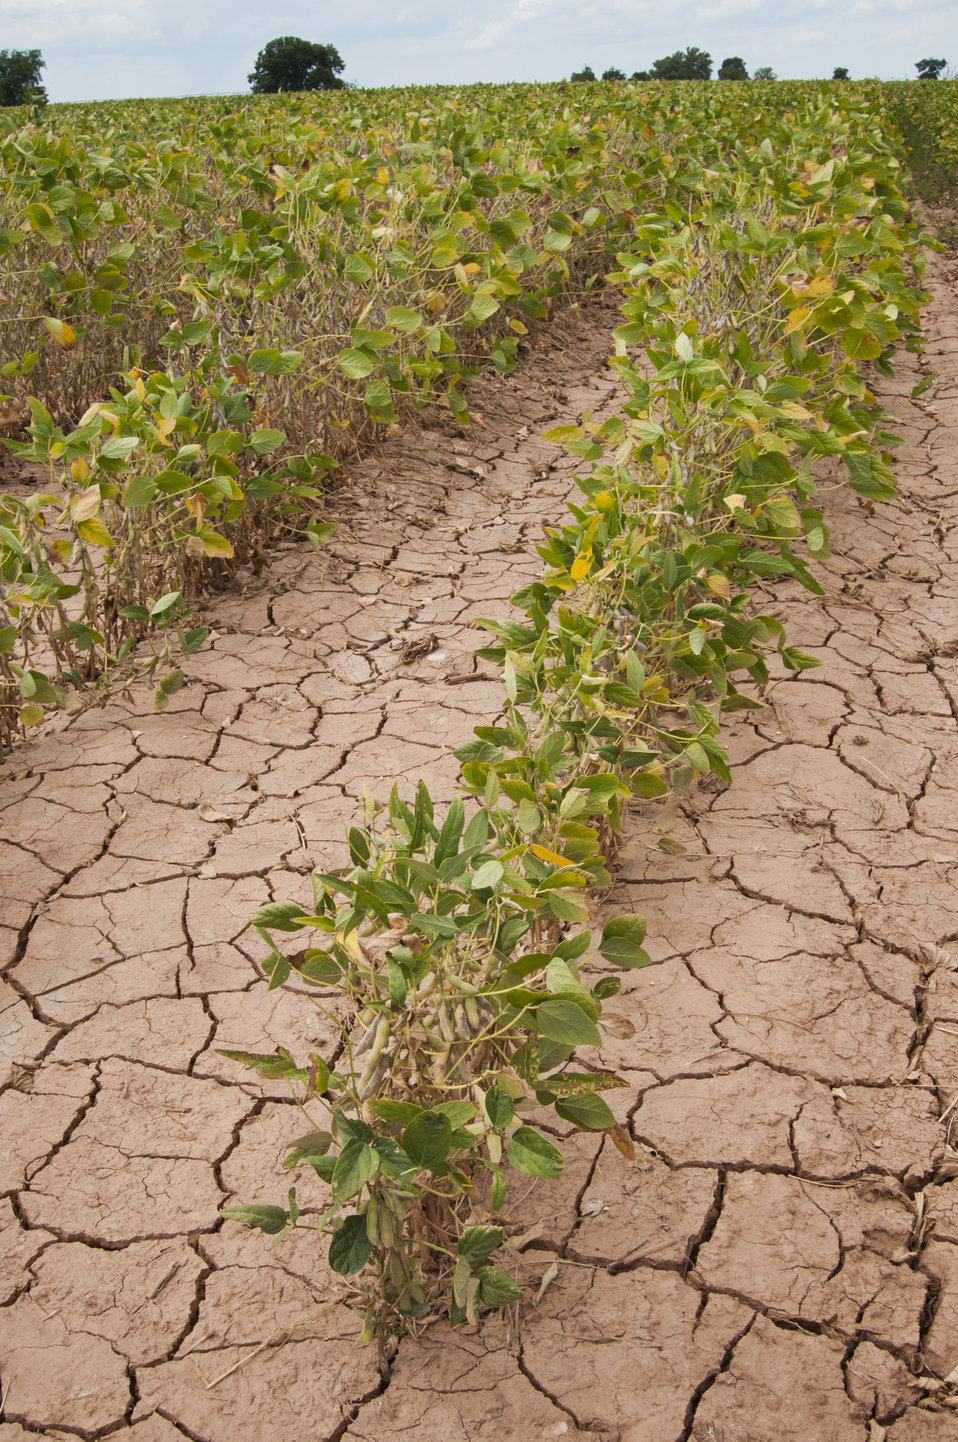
Soybeans show the affect of the Texas drought near Navasota, TX on Aug. 21, 2013 USDA photo by Bob Nichols.